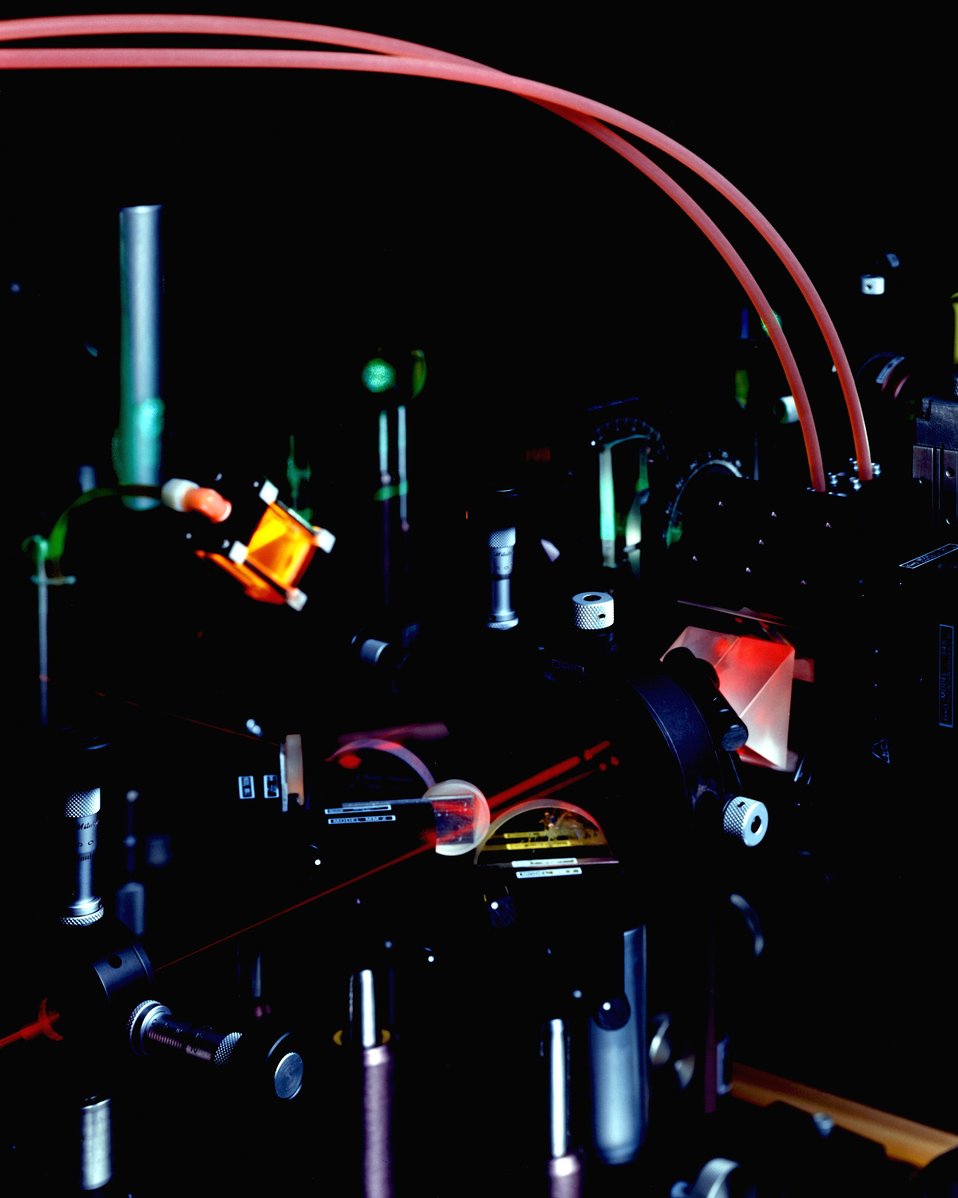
LASER USE IN ENGINE COMBUSTION EXPERIMENTS.